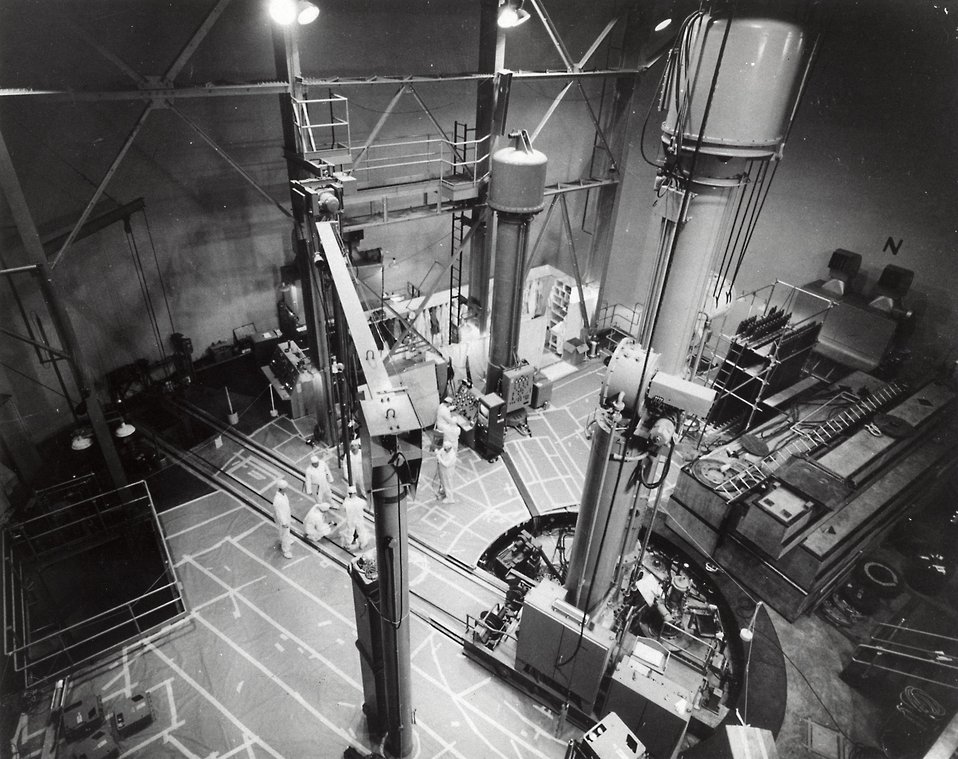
Photo is a view of the reactor operating floor during loading of graphite-clad fuel elements in reactor core that uses High Temperature Gas-cooled Reactor (HTGR) system developed. Circa 1967.